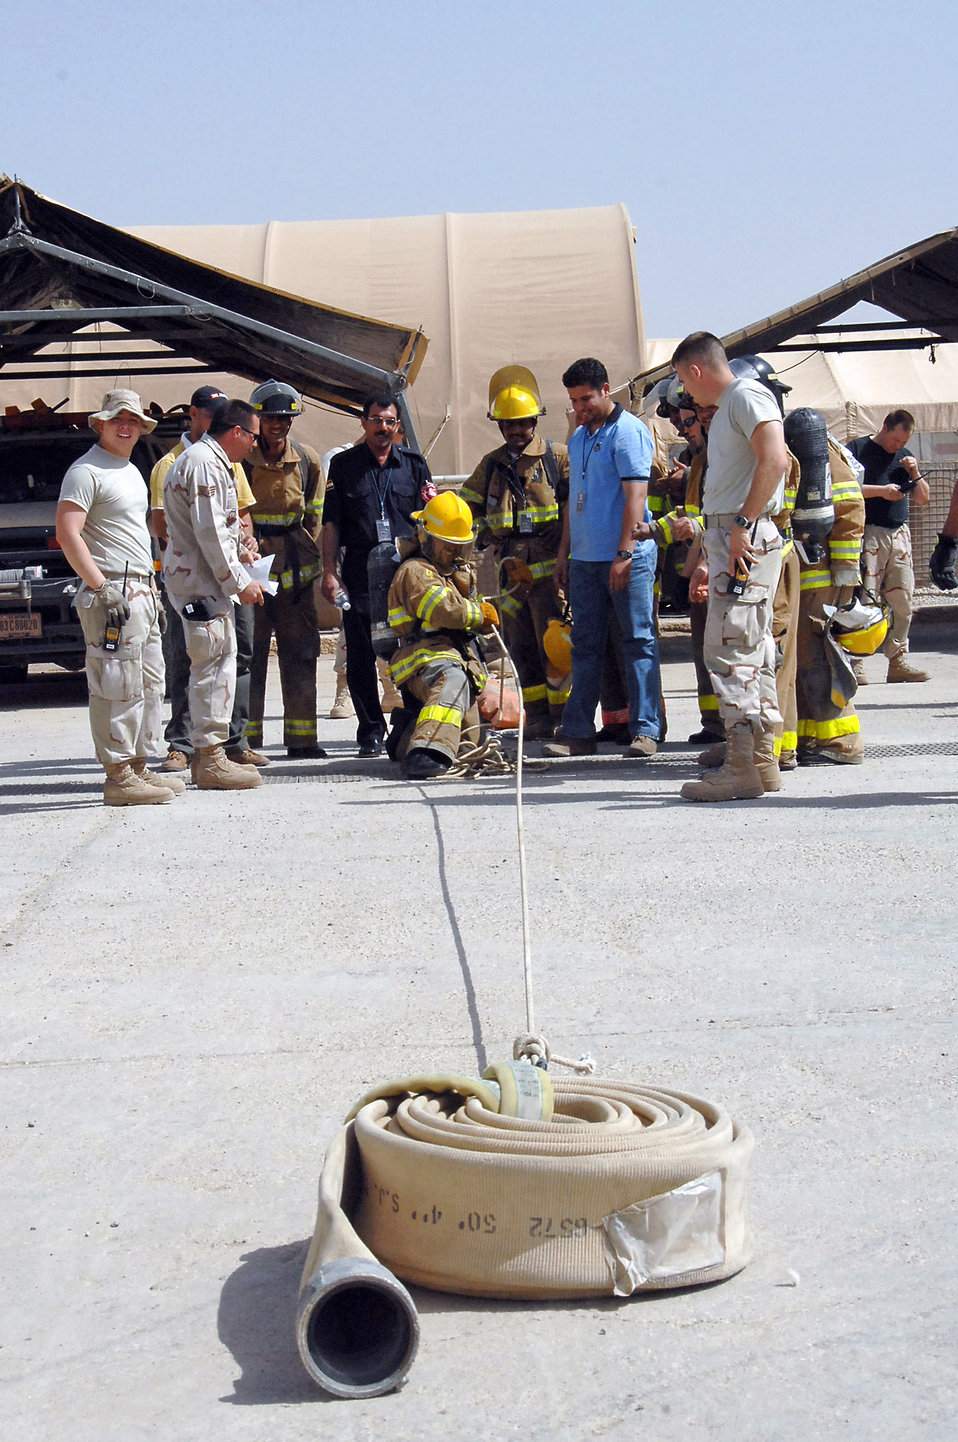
Airmen train Iraqis to save lives

An Iraqi firefighter participates in a